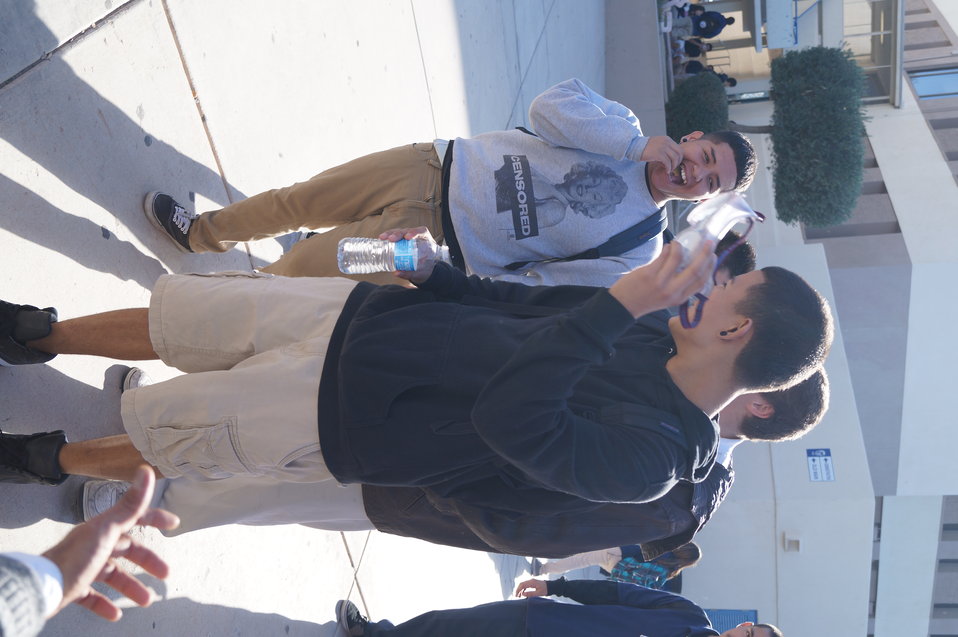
National Drug Facts Week - YUMA HIGH

The Drug Demand Reduction Program out of Yuma Arizona held numerous events at local schools to support NIDA's National Drug Facts Week, Jan. 27-Feb. 2 2014. Teens participated in drug awareness games, and helped to Shatter the Myths about teen substance abuse.